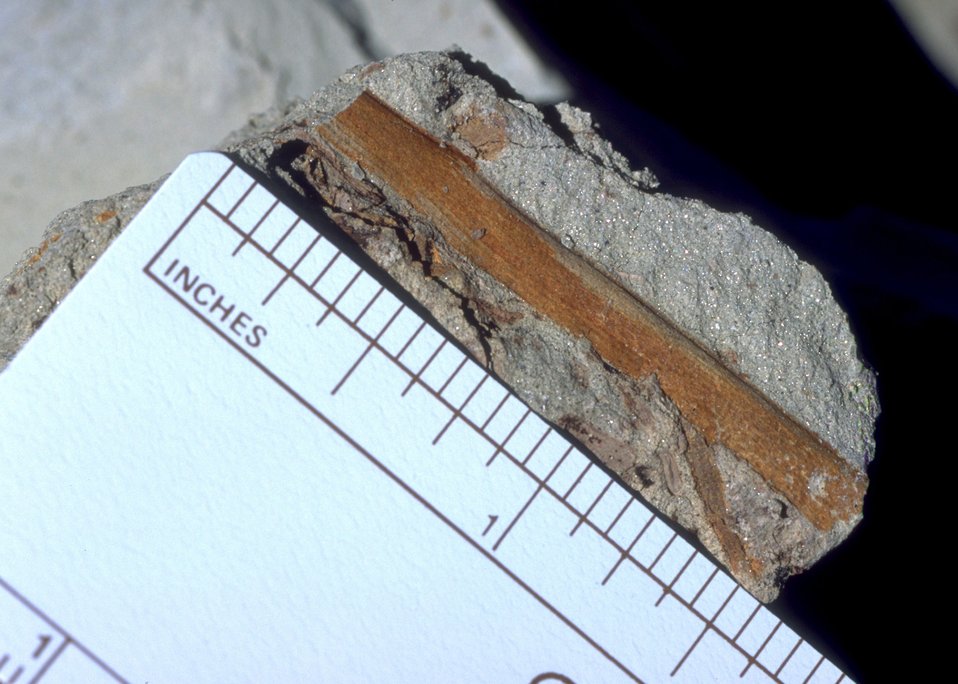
Close up of fossil vegetation, Cedar Ridge Paleo area, Worland Field Office.